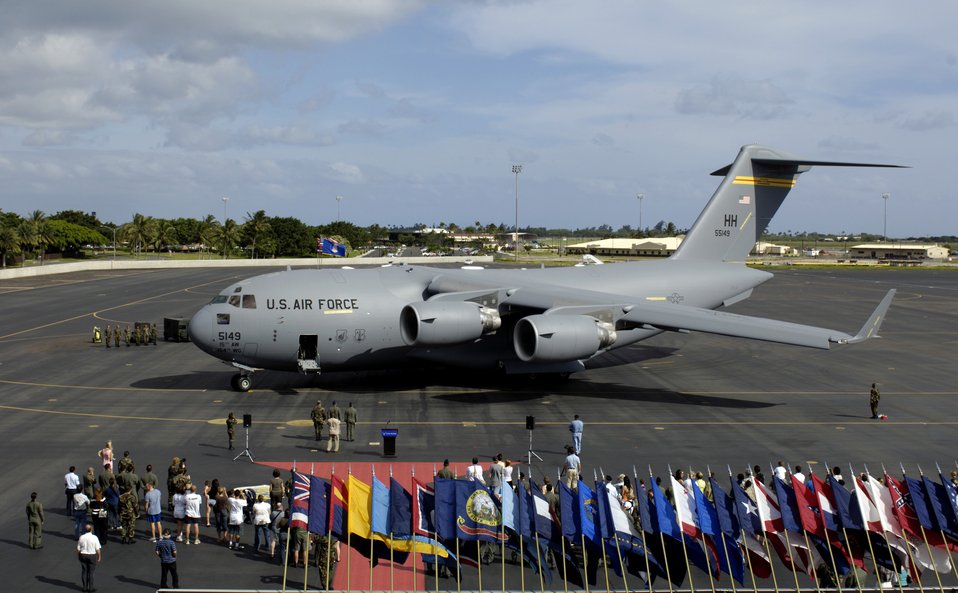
Globemaster III fleet grows at Hickam

A C-17 Globemaster III arrives at its parking spot during a ceremony Saturday, April 8, 2006, at Hickam Air Force Base, Hawaii. This C-17 is the fourth to be assigned to Hickam. It will transition the 15th Airlift Wing and Hawaii Air National Guard's 154th Wing from training to operations.